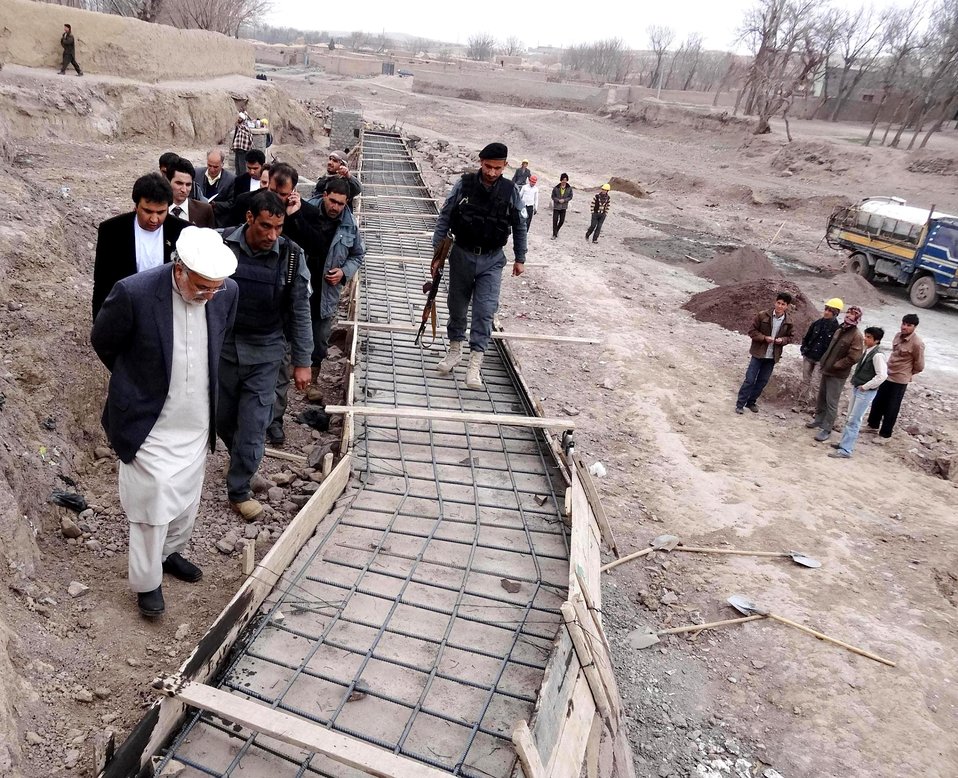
The Herat Provincial Governor visited the work progress of the protection wall construction project in Jaqatai village in Kushk Rabat-e Sangi on December 15th